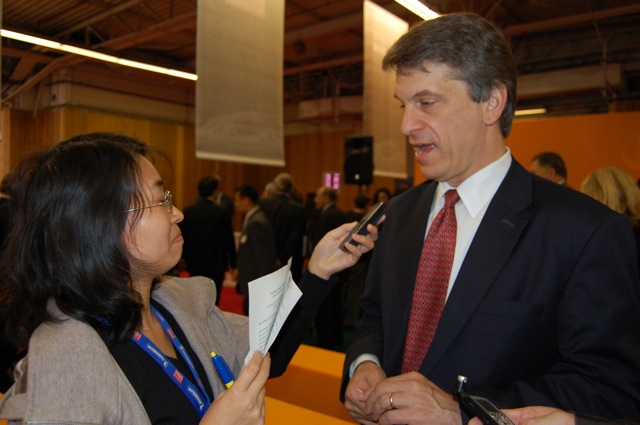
David Sandalow at the Paris Auto Show